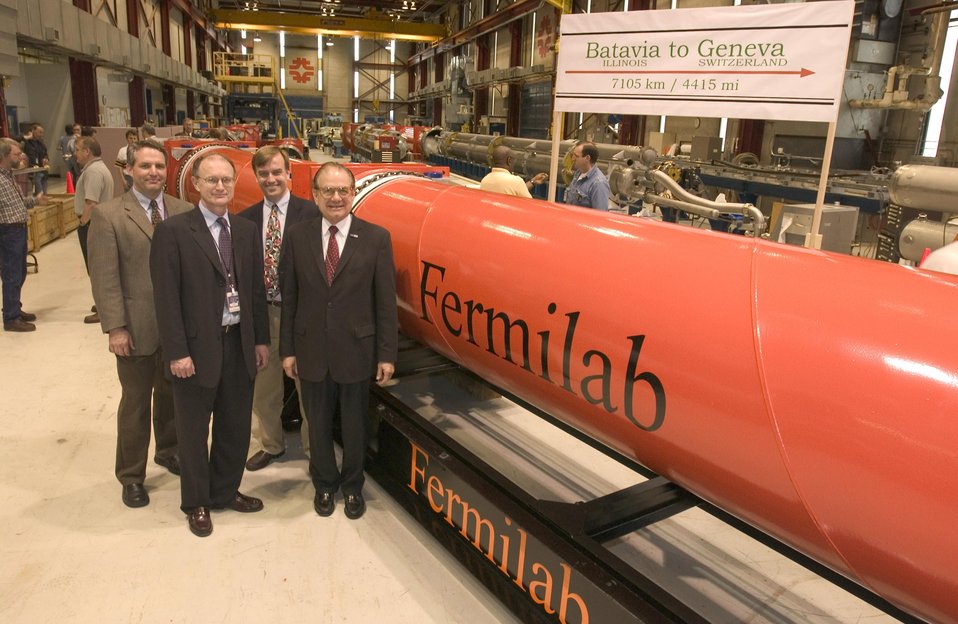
DOE'S FERMI NATIONAL ACCELERATOR LABORATORY PREPARING TO SHIP FIRST ADVANCED, SUPERCONDUCTING MAGNET TO CERN.

THE MAGNET WILL BE SENT TO CERN, THE EUROPEAN ORGANIZATION FOR NUCLEAR RESEARCH IN GENEVA, SWITZERLAND. THE MAGNET WILL PLAY A KEY ROLE IN THE OPERATION OF THE LARGE HADRON COLLIDER, THE PARTICLE ACCELERATOR AT CERN, SCHEDULED TO BEGIN OPERATIONS IN 2007. FROM L-R, FERMILAB PROJECT MANAGER KERBY, FERMILAB DIRECTOR WITHERELL, US-LHC PROJECT MANAGER STRAIT AND DOE OFFICE OF SCIENCE DIRECTOR ORBACH STAND NEXT TO THE FERMILAB MAGNET IN ITS STEEL SHIPPING CONTAINER.